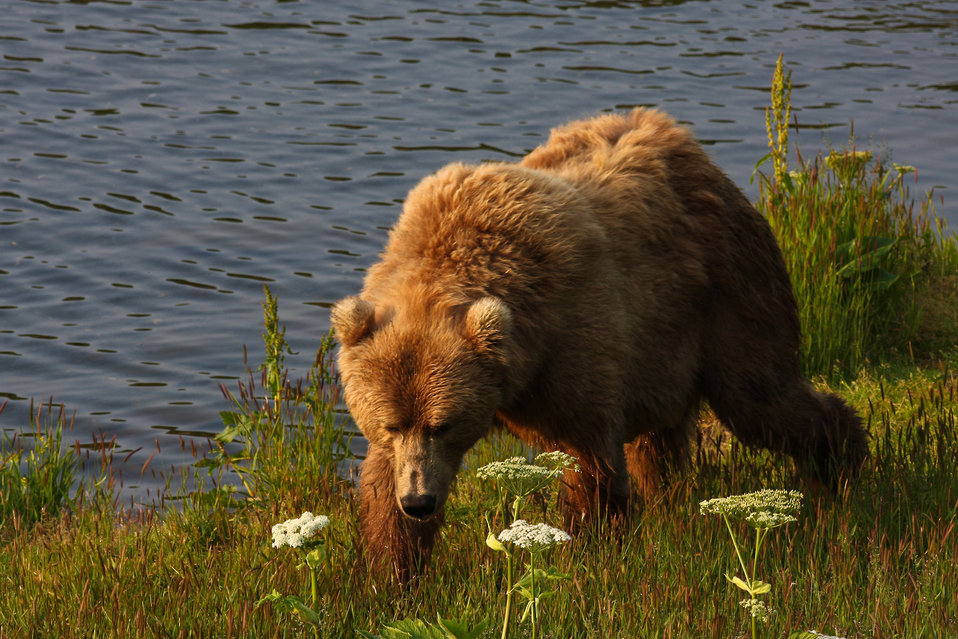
Sunrise stroll

Kodiak brown bear.
Lisa Hupp/USFWS